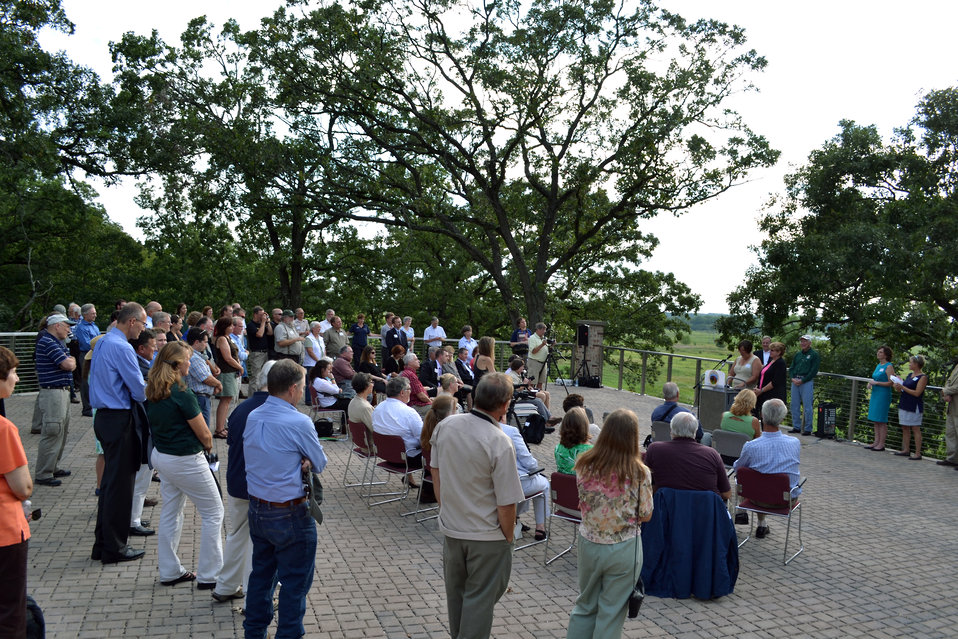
It was a celebration

Supporters and early architects of Hackmatack came out in great numbers to the Lost Valley Visitor Center at Glacial Park.